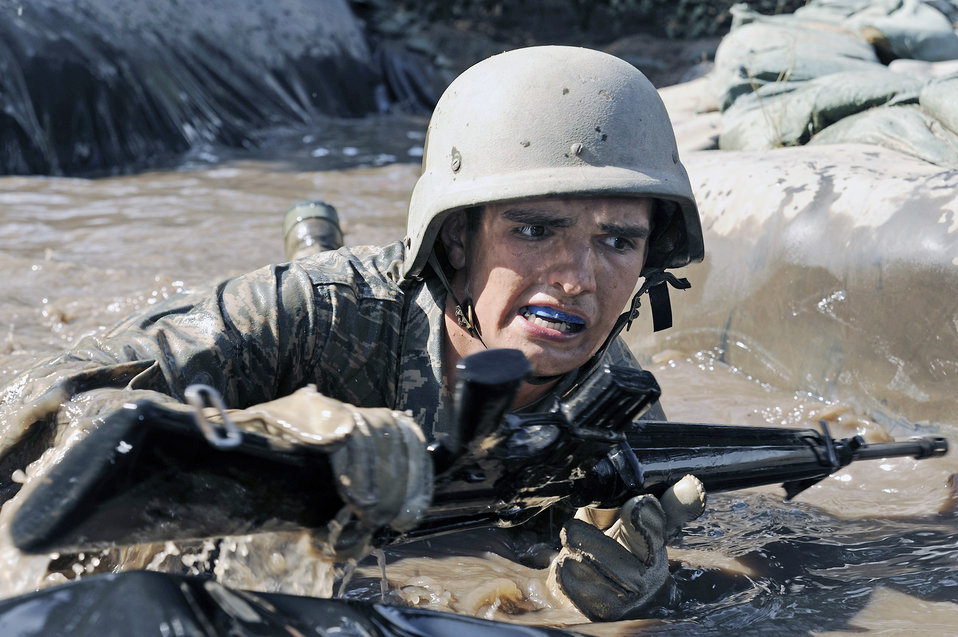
Academy basic field training at Jacks Valley

Air Force Academy Basic Cadet Evan Rowley pushes through the water obstacle at the Jacks Valley Assault Course July 21 near Colorado Springs, Colo. Basic cadet training started June 25 and continues through Aug. 1.